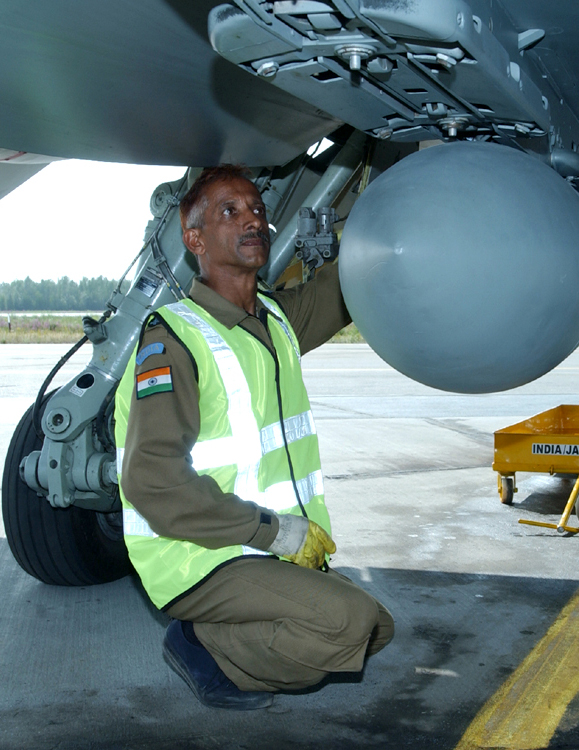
Preparing to cope

EIELSON AIR FORCE BASE, Alaska -- Indian air force Junior Warrant Officer Kumar attaches a bomb pod to the bottom of a GR-1 Jaguar here July 12. The Indian air force is just one group participating in Cooperative Cope Thunder 04-01 which begins July 15. Cooperative Cope Thunder is a combat-operations exercise involving aircraft from several services and nations.